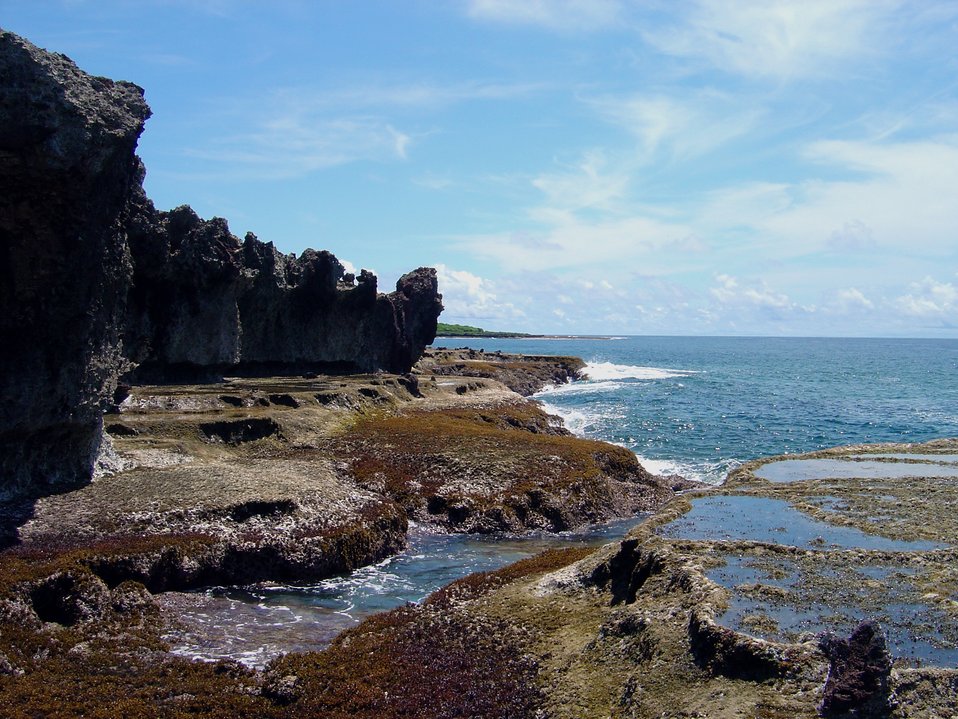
Uncovered reef flat with intervening channels at low tide on the Guam coastline.